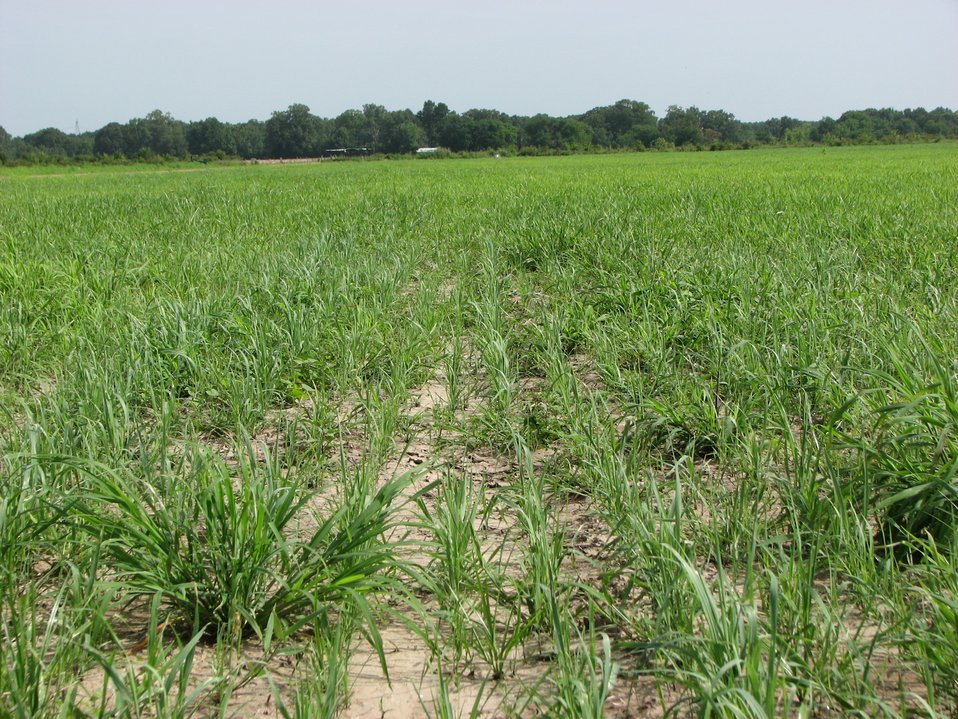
U. S. Department of Agriculture researchers and Mississippi State University collaborators are investigating whether switchgrass, a cellulosic biofuel crop, may be suitable for use on and near airport grounds. The goal is to identify biofuel crops that limit use by wildlife hazardous to aircraft and are compatible with safe airport operations.